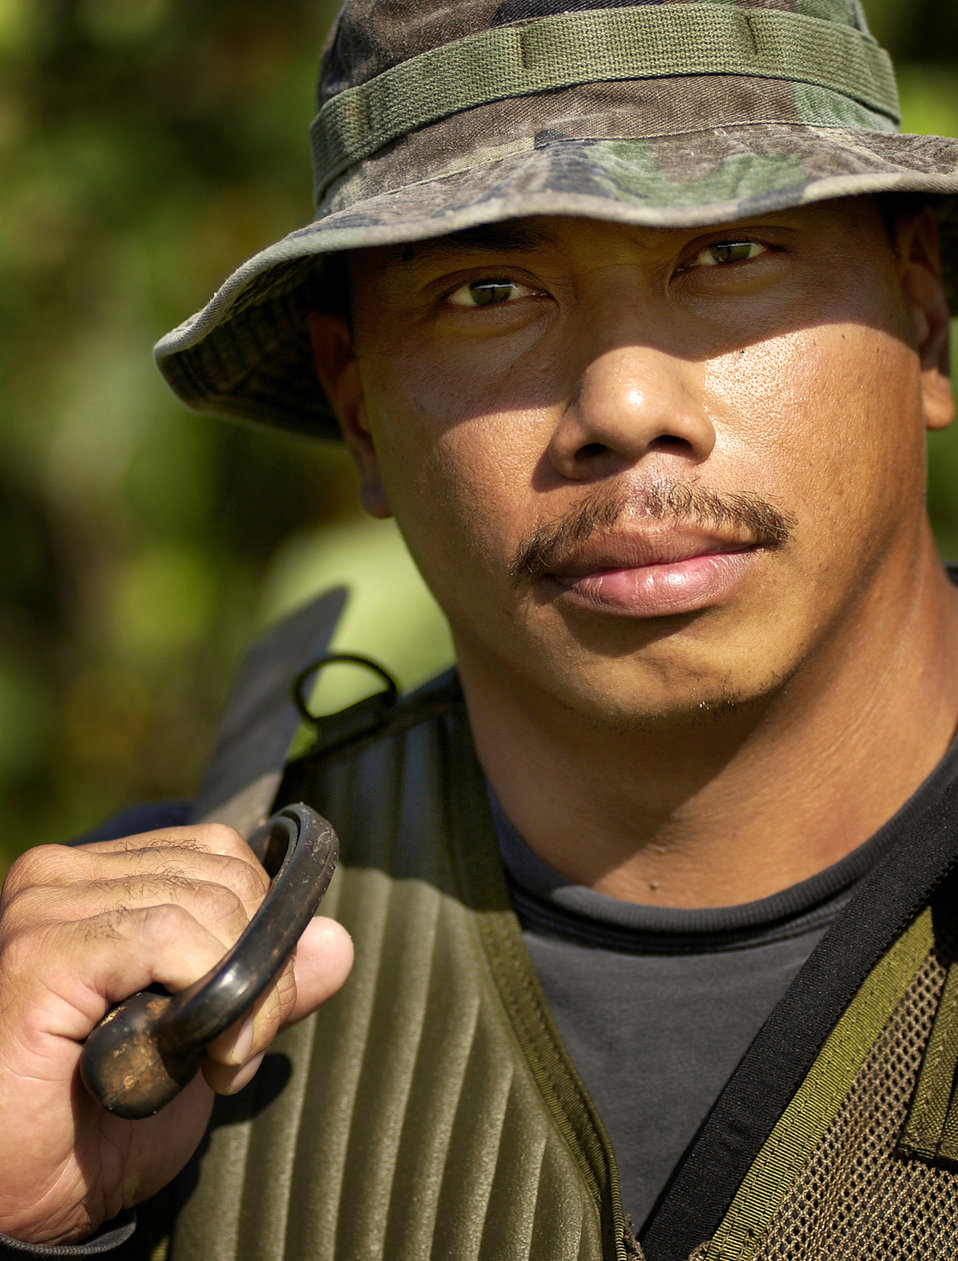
Tracking techniques

ANDERSEN AIR FORCE BASE, Guam (AFPN) -- Guam police tactical tracker Andersen B. Quitugna waits before a training mission with 613th Security Forces Squadron. Airmen are learning tracking techniques from the Guamanian Police in the island's jungles.